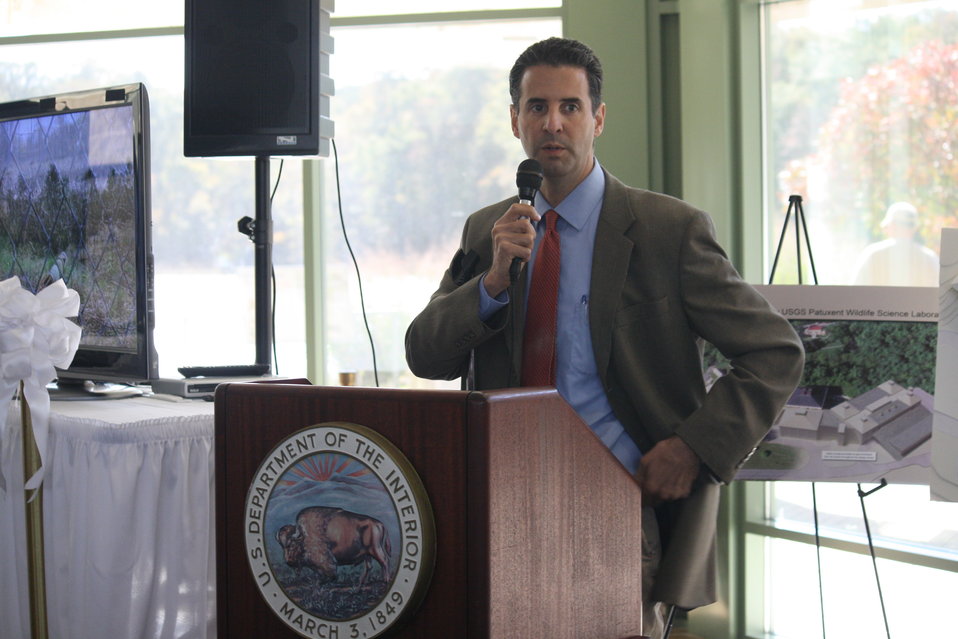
Patuxent Research Refuge 75th Anniversary

Representative John Sarbanes gives a speech at the dedication of the Whooping Crane Observatory.